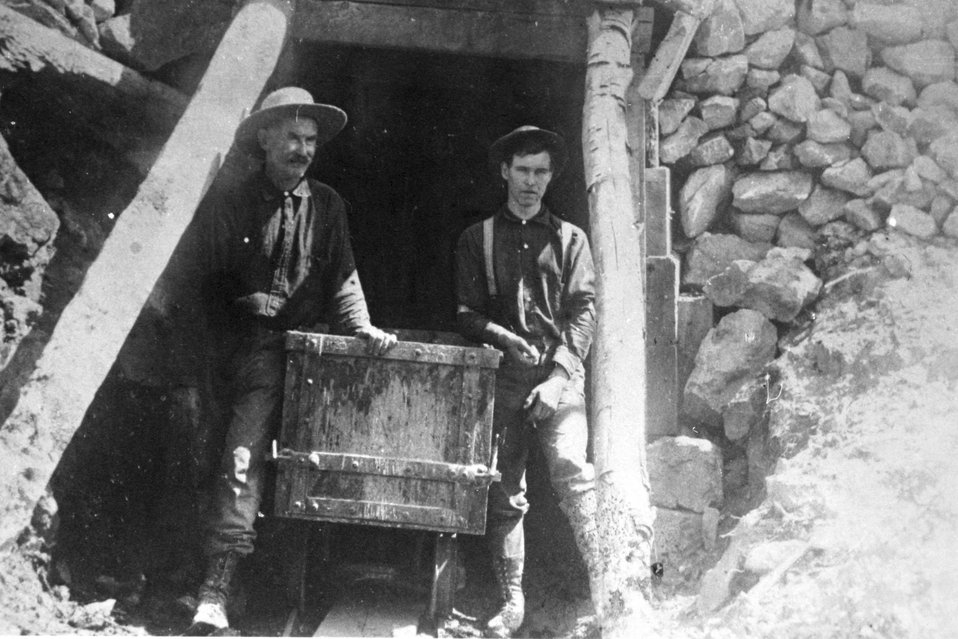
Almeda Mine